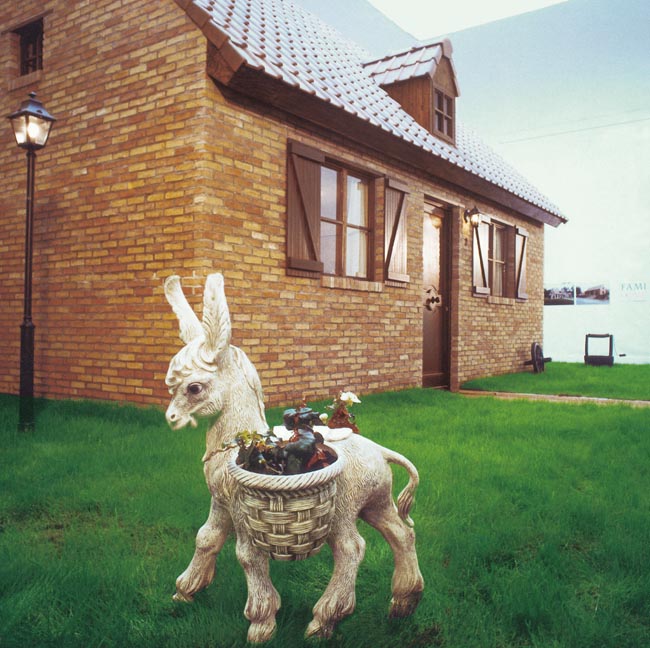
'Fami-Home' installation by the Belgian artist Guillaume Bijl.